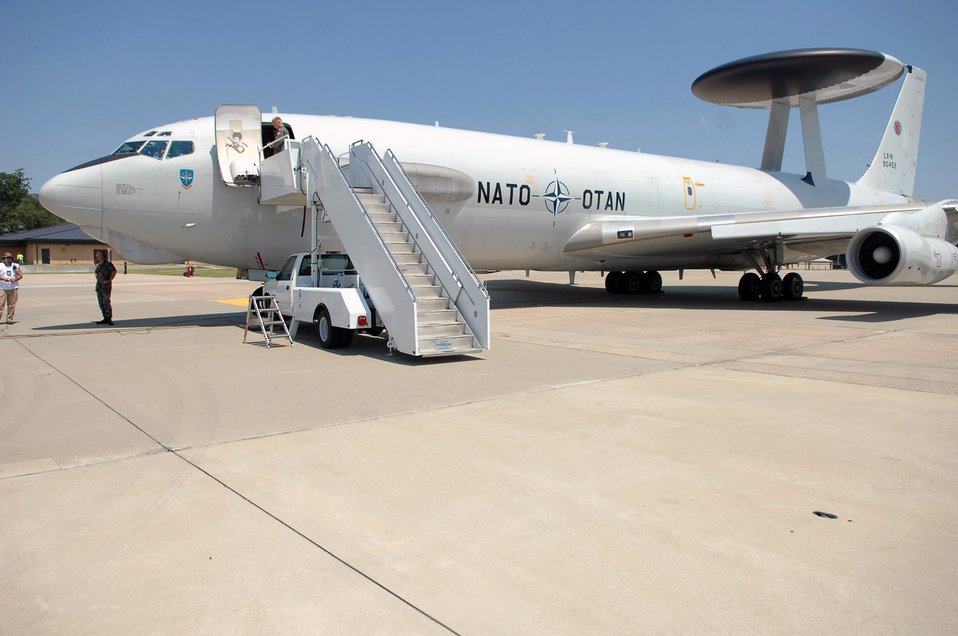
NATO AWACS conducts Strike Eagle dogfights

A NATO E-3A Sentinel, an airborne warning and control systems aircraft from Geilenkirchen, Germany, sits on the flightline Aug. 12 at Seymour Johnson Air Force Base, N.C. The aircraft has crewmembers from Germany, Turkey, Greece, Denmark, United States, Portugal and Canada.